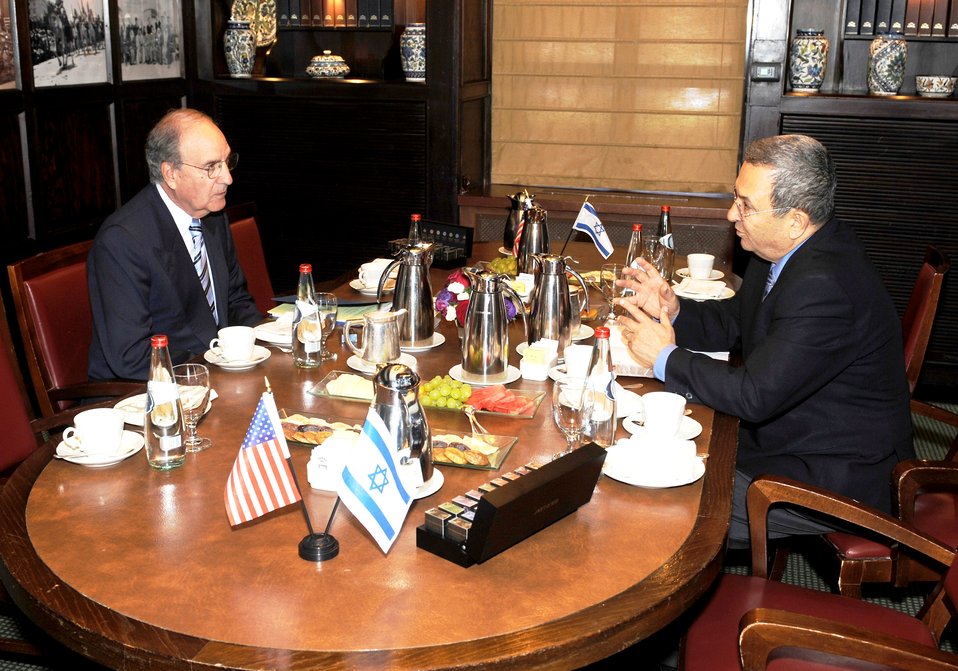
Israeli Defense Minister Barak and Special Envoy Mitchell Meet

Israeli Defense Minister Ehud Barak and U.S. Special Envoy for Middle East Peace George Mitchell meet at the King David Hotel in Jerusalem on June 17, 2010.